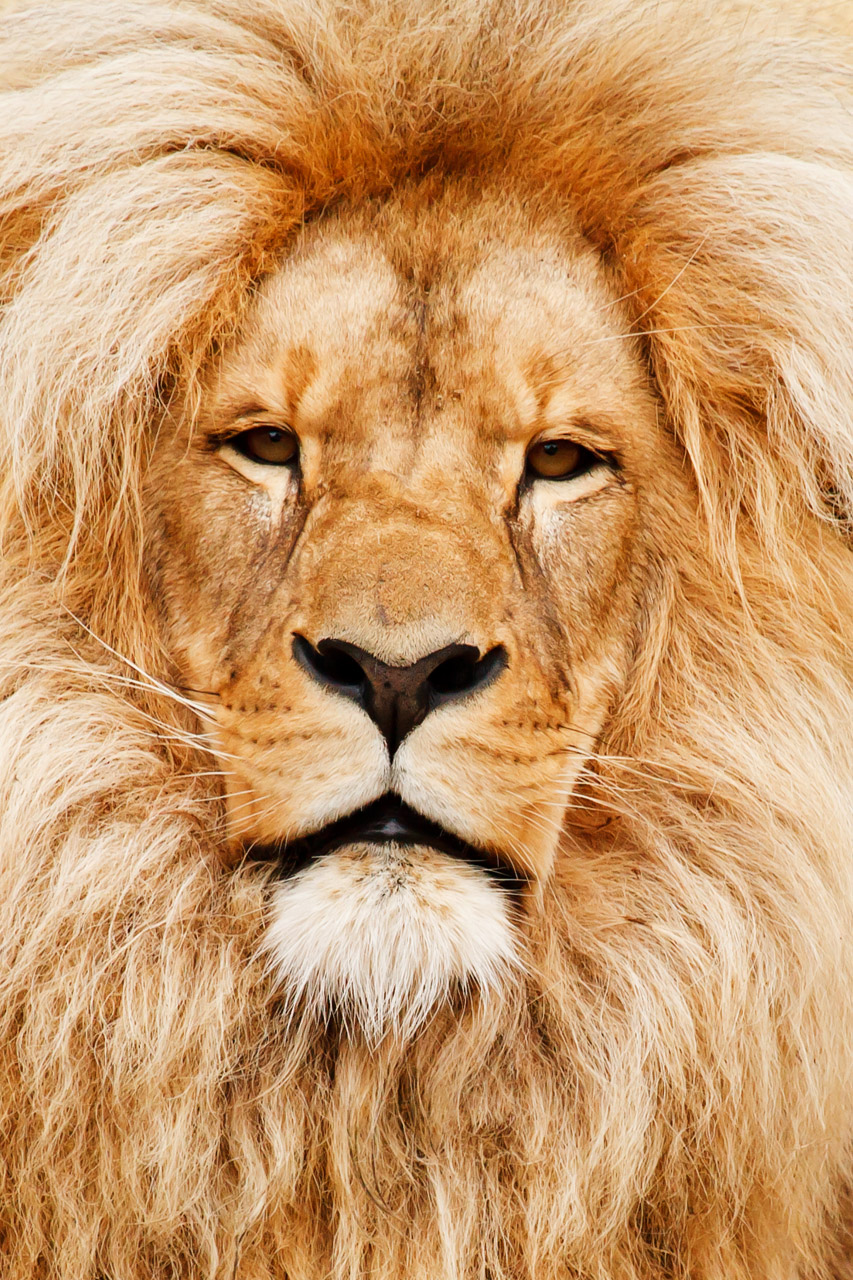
Lion portrait

Lion's face.